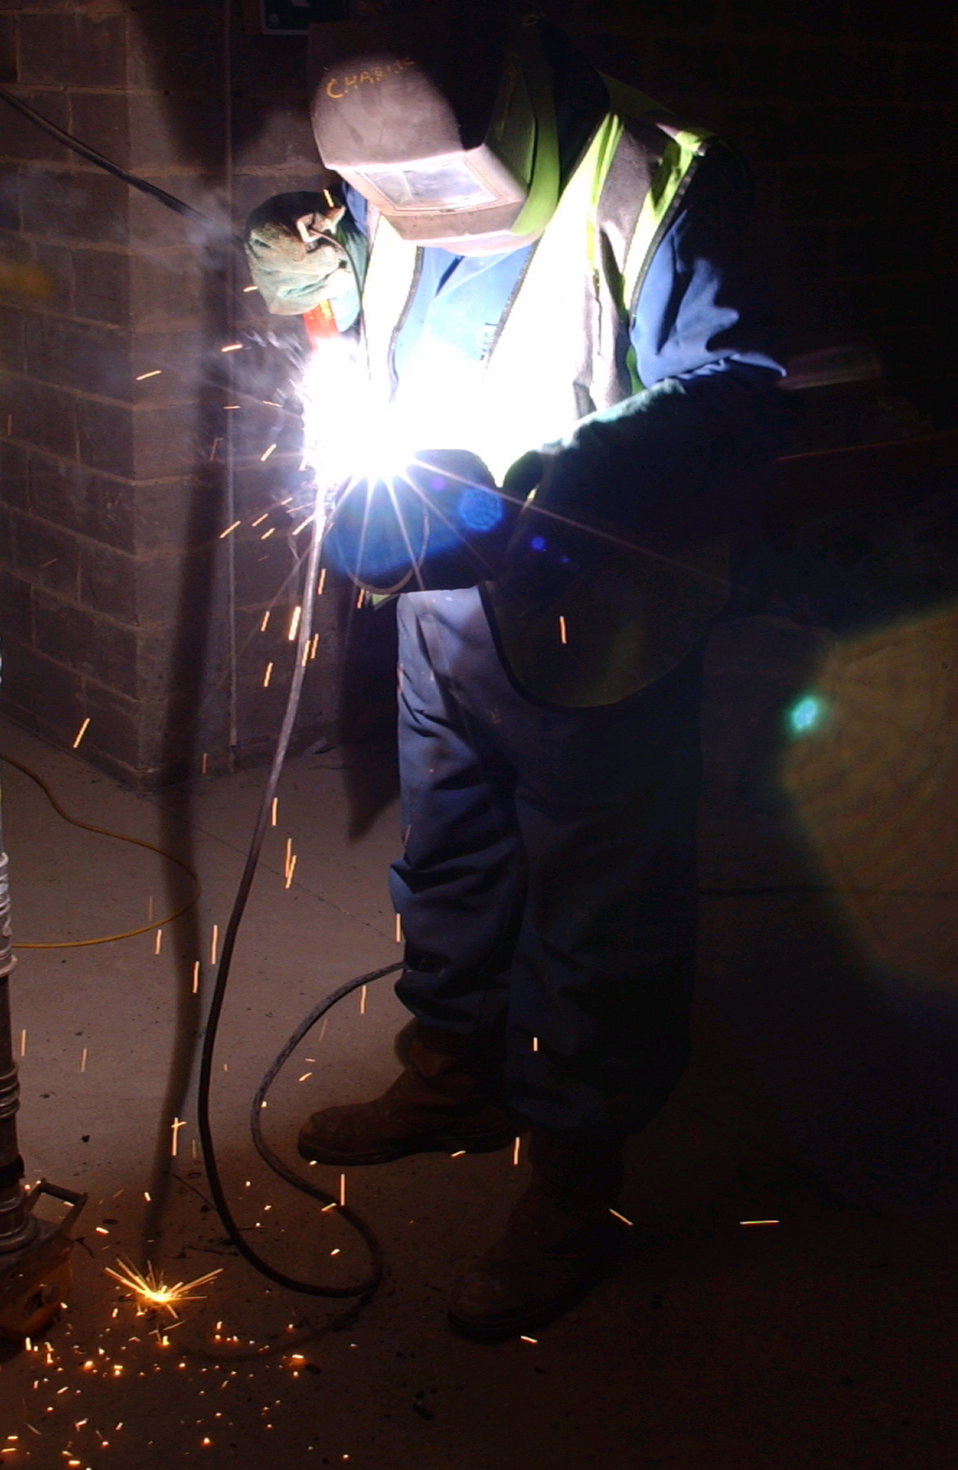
Building it up

ROYAL AIR FORCE LAKENHEATH, England -- Mervin King grinds and welds pipes to be laid throughout a new lodging building here May 13. Mr. King is a construction worker for the base.